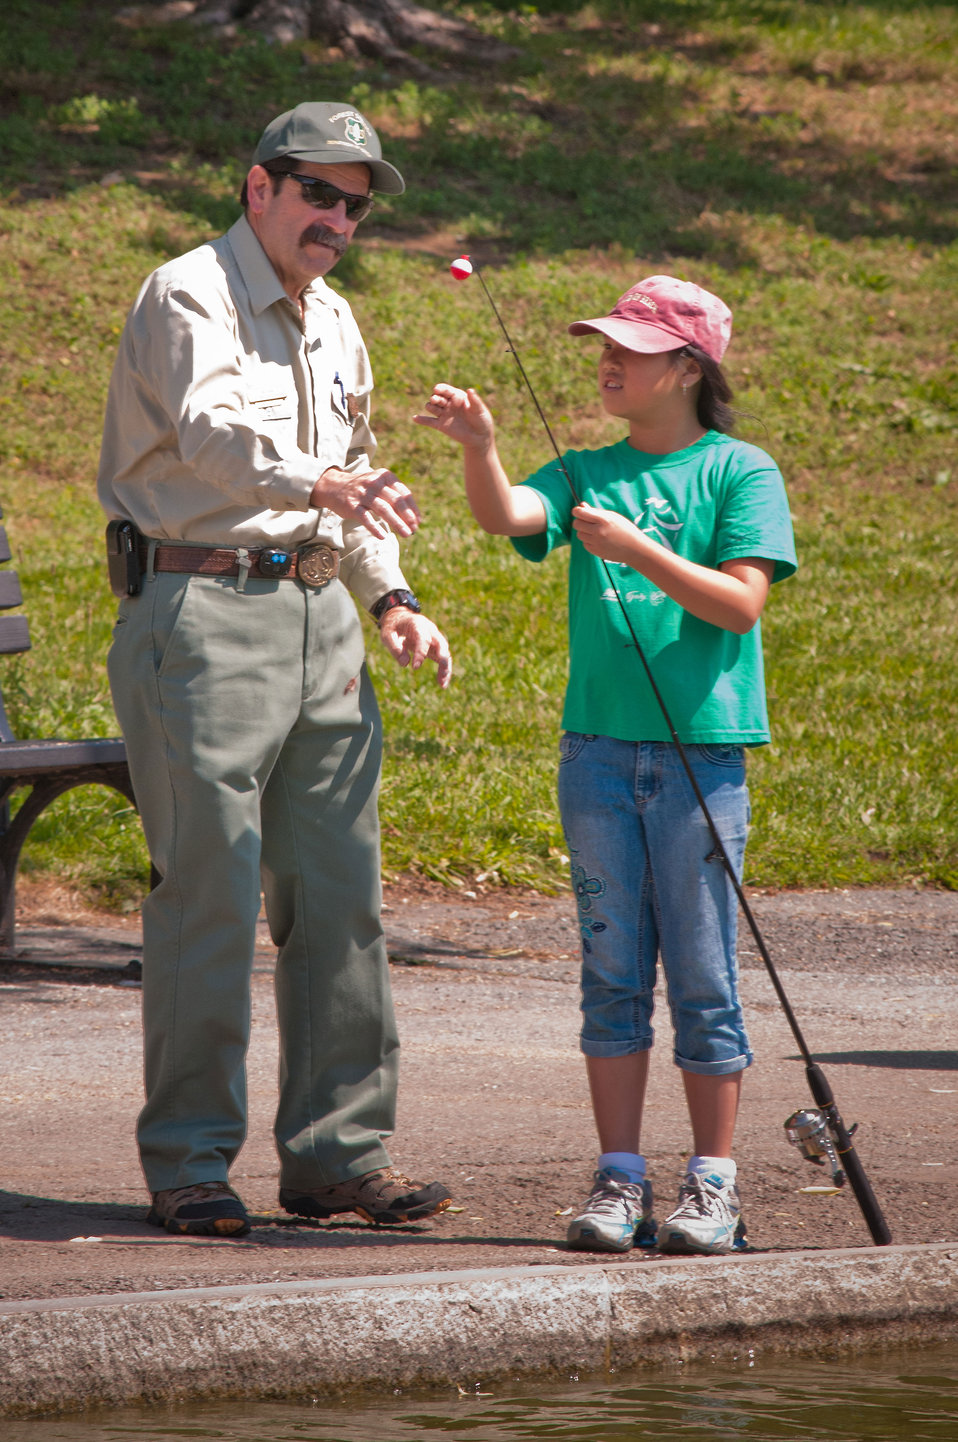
U.S. Forest Service Associate Deputy Chief Jim Pena assists John Eaton Elementary School student Josie Prentice with her fishing pole during National Fishing Day at Constitution Gardens in Washington, D.C. on Monday, June 4, 2012. The Forest Service along with many Federal agencies, non-profit organizations and outdoor recreation companies demonstrated the joy of fishing to local elementary school students.